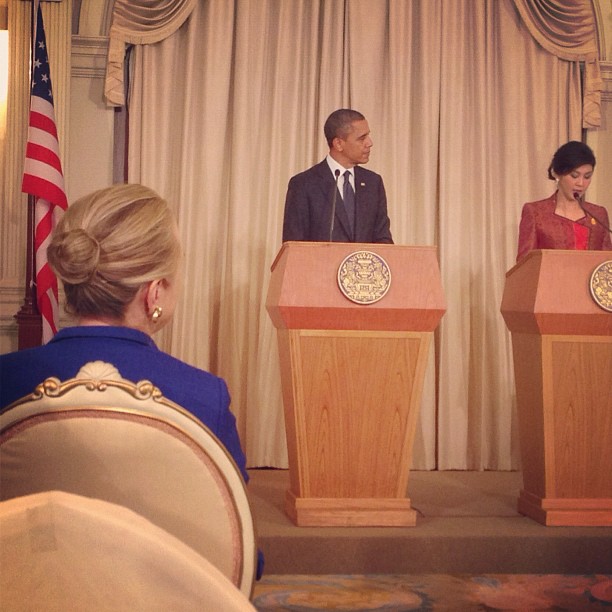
President Obama and Thai Prime Minister Shinawatra Hold a Joint Press Conference

U.S. Secretary of State Hillary Rodham Clinton watches U.S. President Barack Obama, left, and Thai Prime Minister Yingluck Shinawatra, right, during a joint news conference at the Government House in Bangkok, Thailand, November 18, 2012.